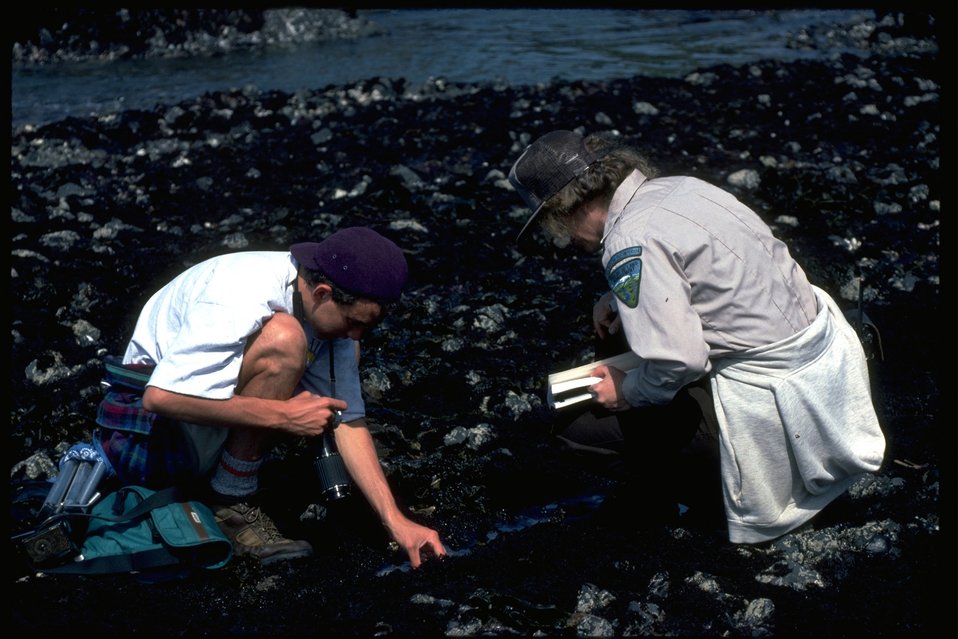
A visitor and a BLM employee are looking in the Yaquina Head Tidepools.